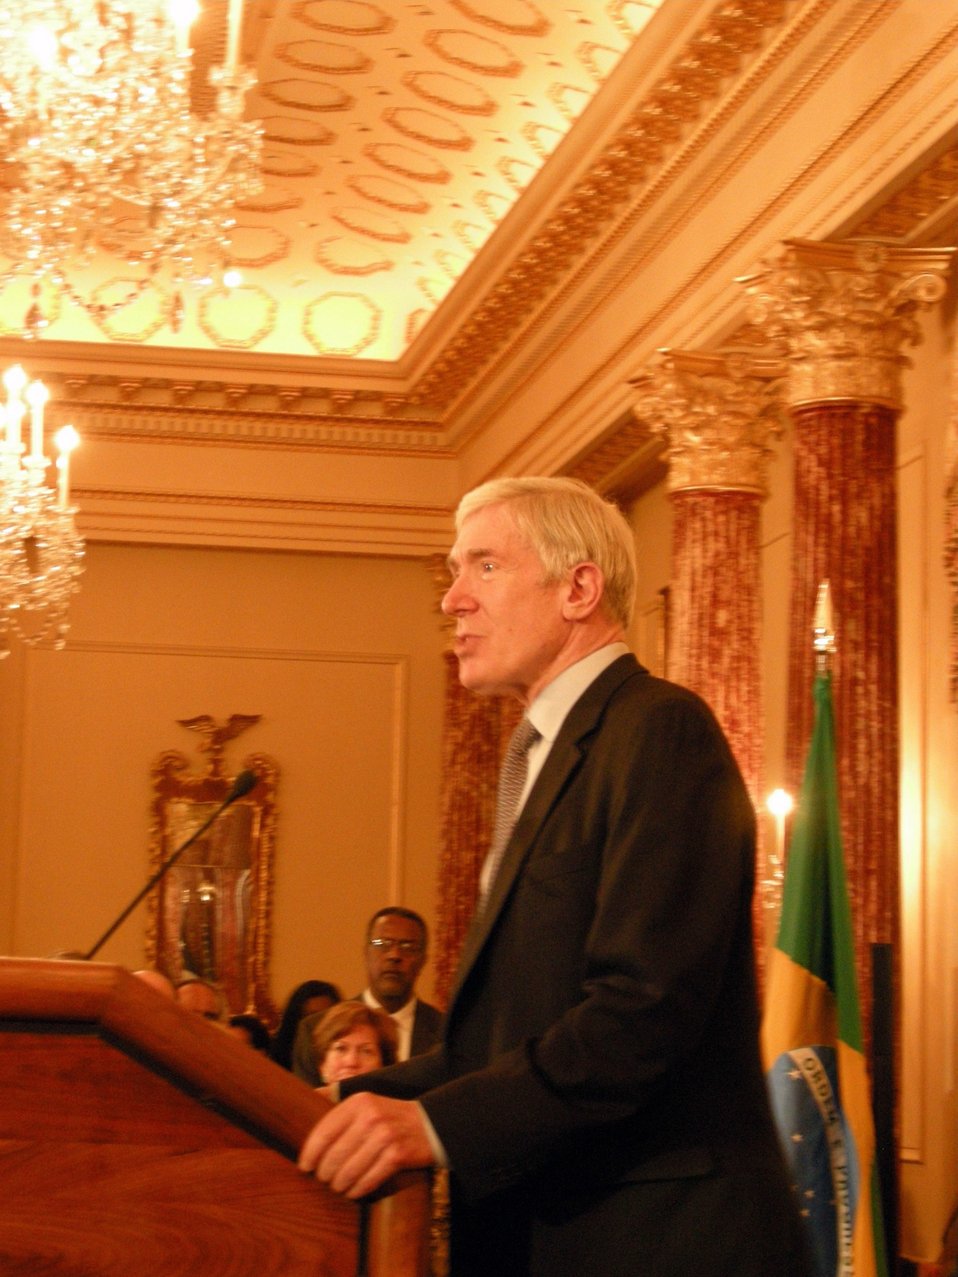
Under Secretary Hormats Honors World Food Prize Recipients

Under Secretary of State for Economic, Energy and Agricultural Affairs Robert Hormats honors the former President of Ghana, John Agyekum Kufuor, and the former President of Brazil, Luiz Inacio Lula da Silva, as recipients of the 2011 World Food Prize, at the U.S. Department of State in Washington, D.C., on June 21, 2011.